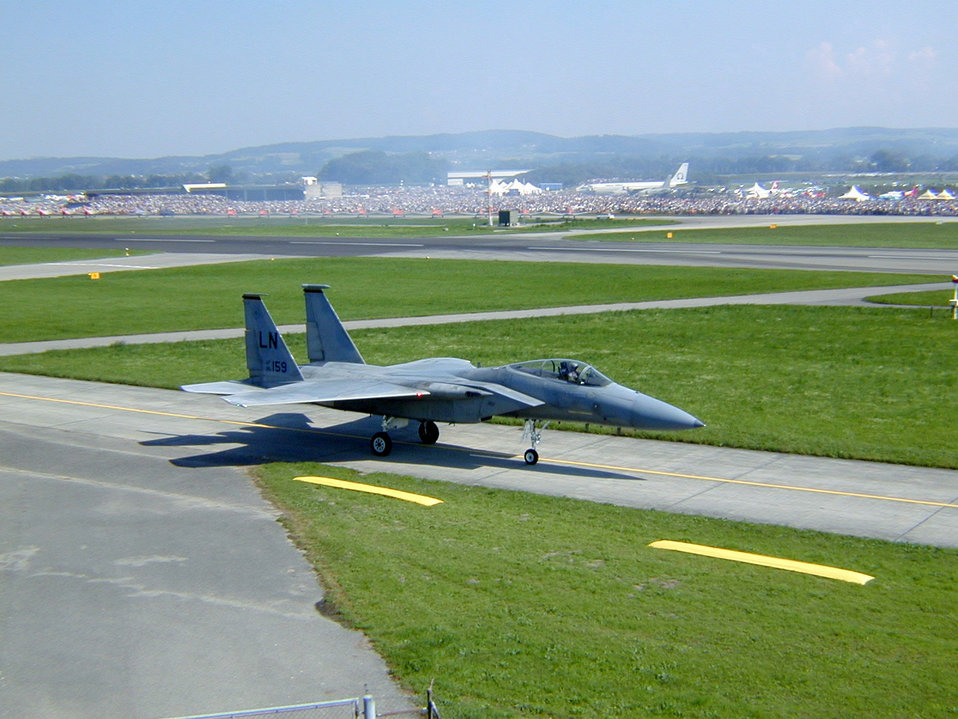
American Eagle flies in Swiss sky

PAYERNE AIR BASE, Switzerland -- Capt. Joel Hemphill taxis an F-15 Eagle back to the parking area after his performance Sept. 5 for more than 180,000 people at the Air 04 air show here. This is the first air show in Switzerland in more than 12 years. Captain Hemphill is a pilot with the F-15 West Coast Demonstration Team from the 33rd Fighter Wing at Eglin Air Force Base, Fla. The aircraft is from Royal Air Force Lakenheath, England.